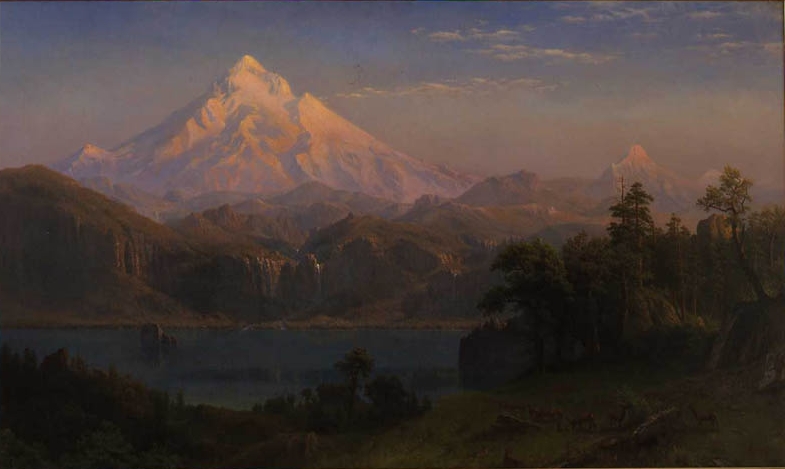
Albert Bierstadt - Mount Hood